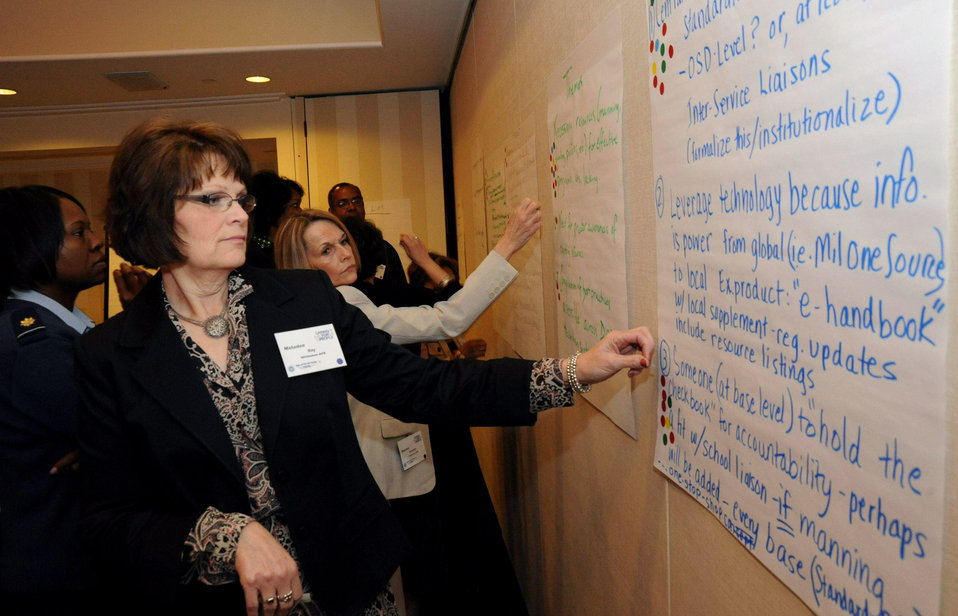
Air Force officials hold Caring for People Forum

Meladee Bay votes on themes during a working group session at the Year of the Air Force Family: Caring for People Forum April 1 in Arlington, Va. The 25-person group developed themes and will use the best to develop initiatives focusing on special-needs children. Mrs. Bay is the chief of the Airman and Family Support Flight at Whiteman Air Force Base, Mo.